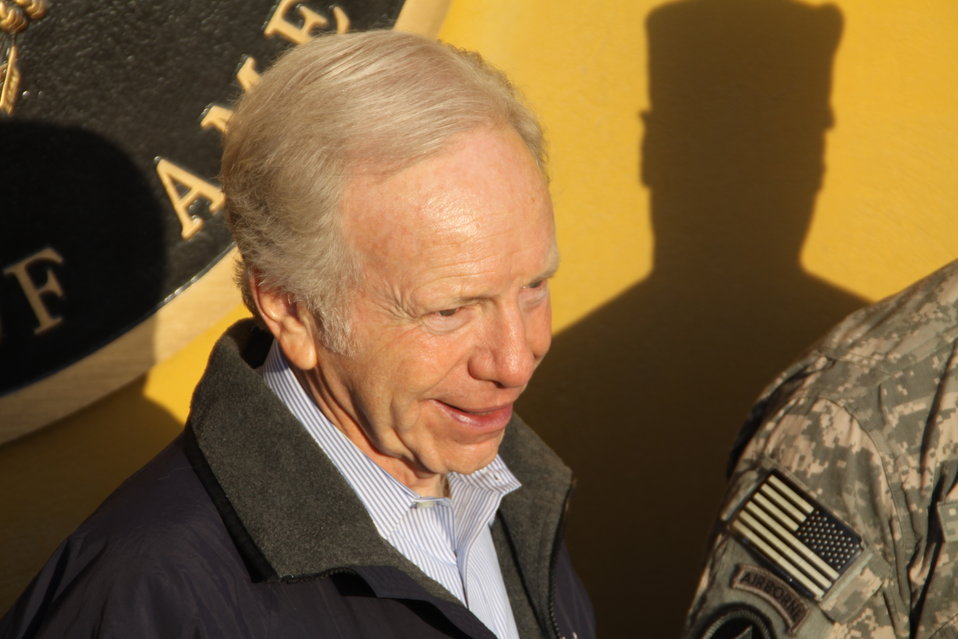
Senator Lieberman